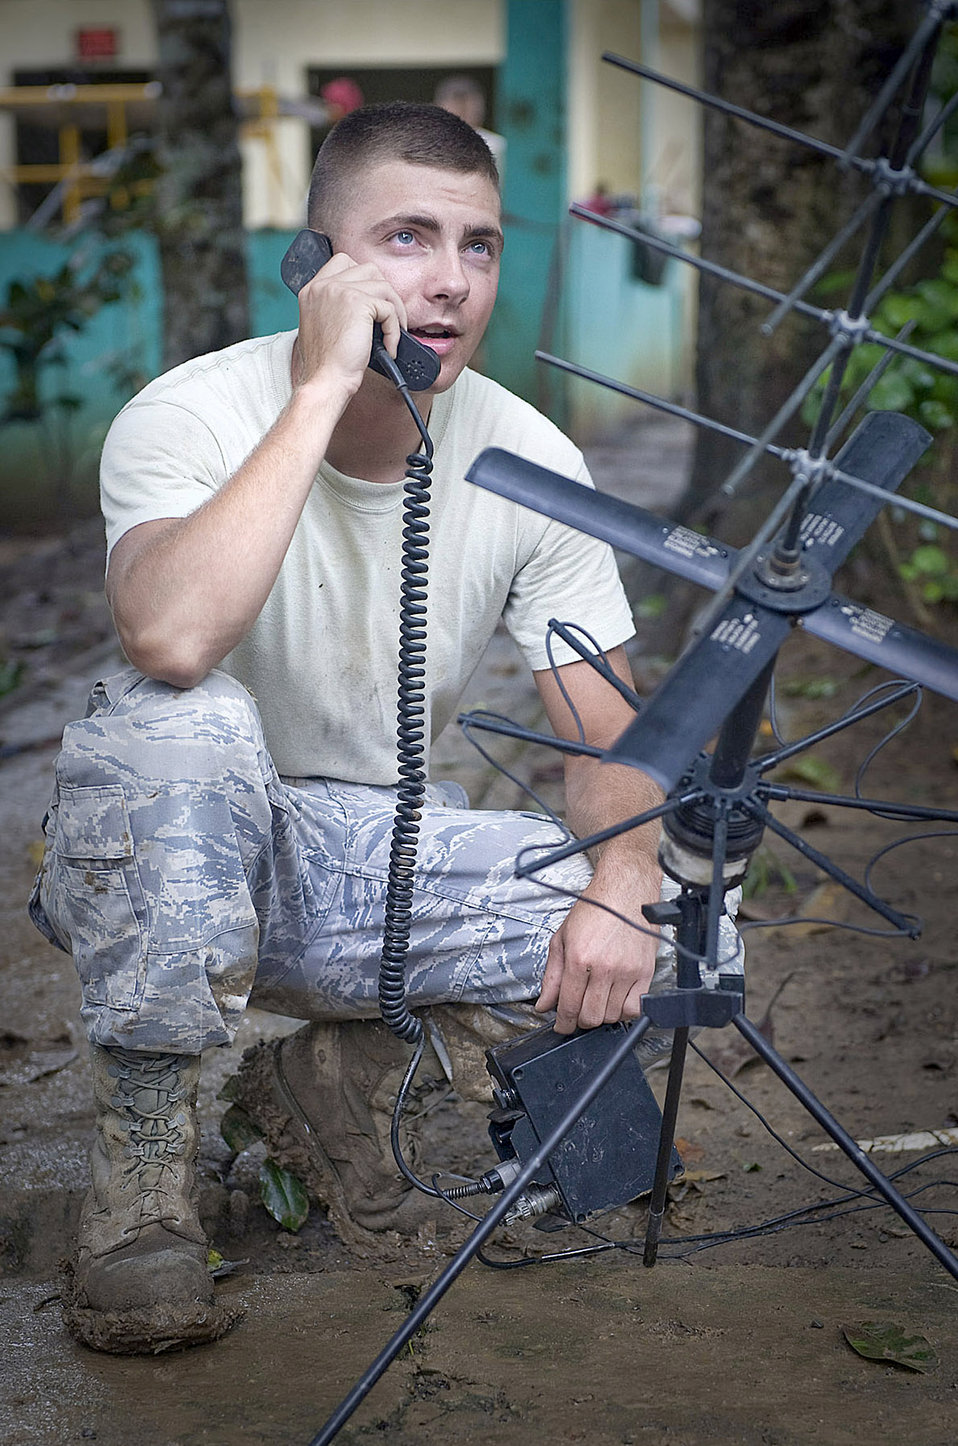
32 CBCS New Horizons

Airman 1st Class Jeffery Westmoreland radios personnel movements to the tactical operations center July 28, 2010, during Exercise New Horizons Panama 2010. Airman Westmoreland is deployed from the 32nd Combat Communications Squadron.